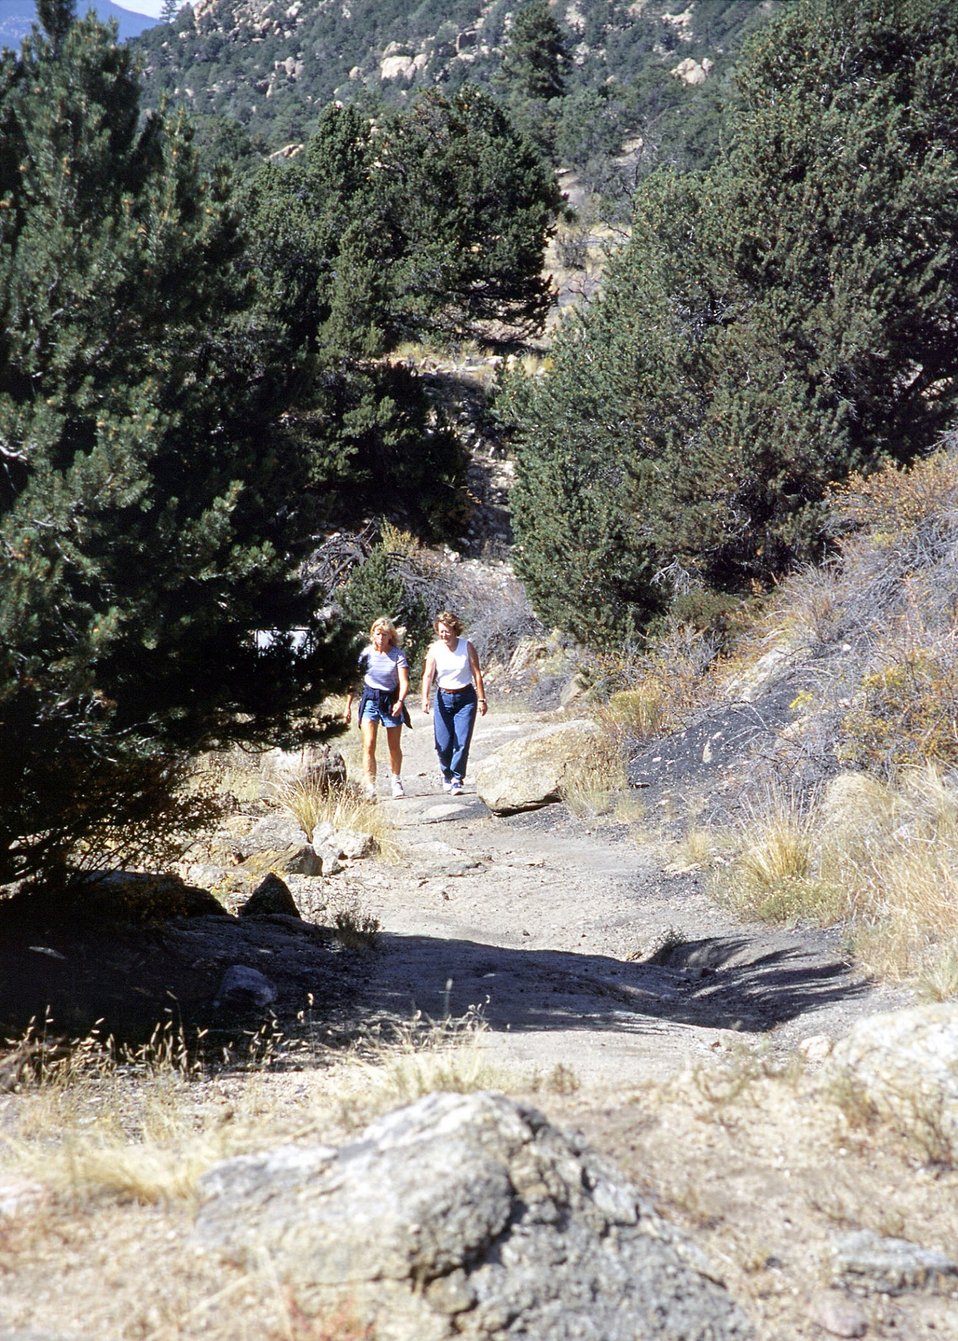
Hikers on trail